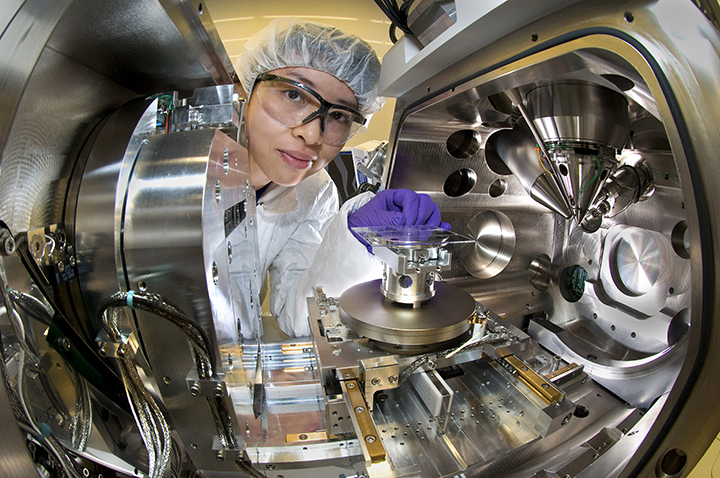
The Nanofabrication Facility at Brookhaven's Center for Functional Nanomaterials provides 5,000 square feet of class 1000 clean room space dedicated to state-of-the-art processing of thin-film materials and devices.